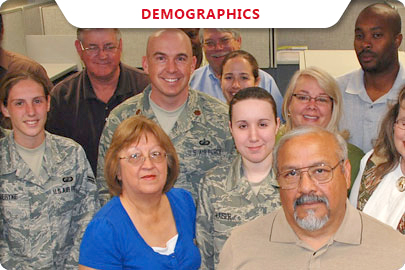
Service demographics offer snapshot of force

Air Force Personnel Center officials here recently published a demographics report offering a snapshot of the service's active-duty and civilian force.